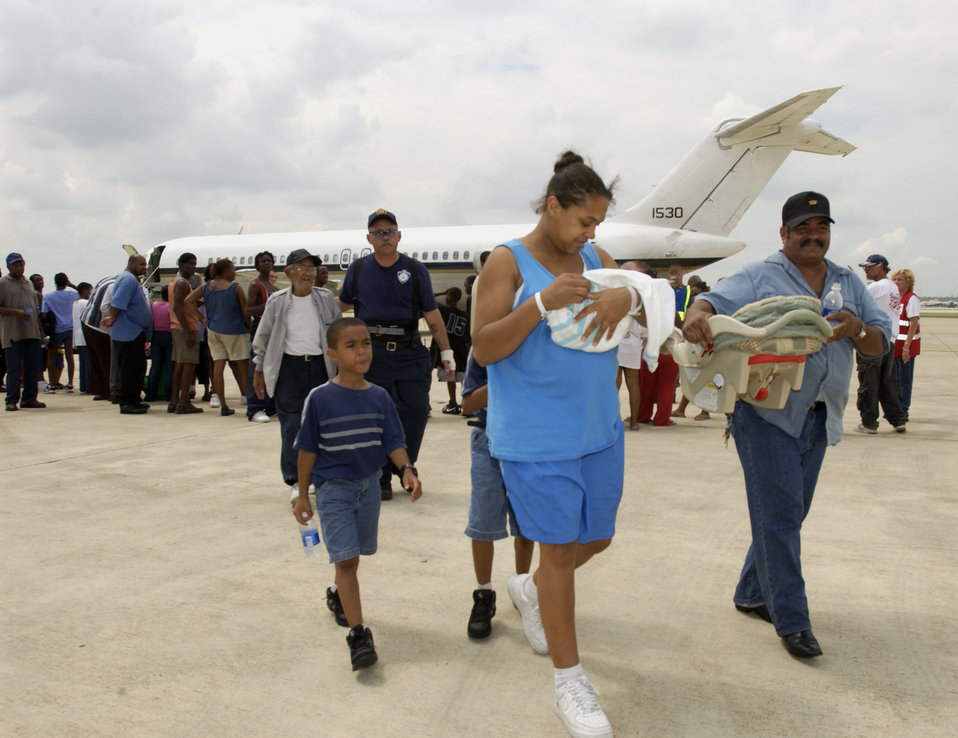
Price family glad to leave New Orleans

LACKLAND AIR FORCE BASE, Texas -- (From left) Ralf Price Jr., Dianna Price and Ralf Price arrive here with their family. The Hurricane Katrina evacuees arrived Sept. 3 from New Orleans. Evacuees are being inprocessed, given a medical checkup, fed and put into temporary shelters.